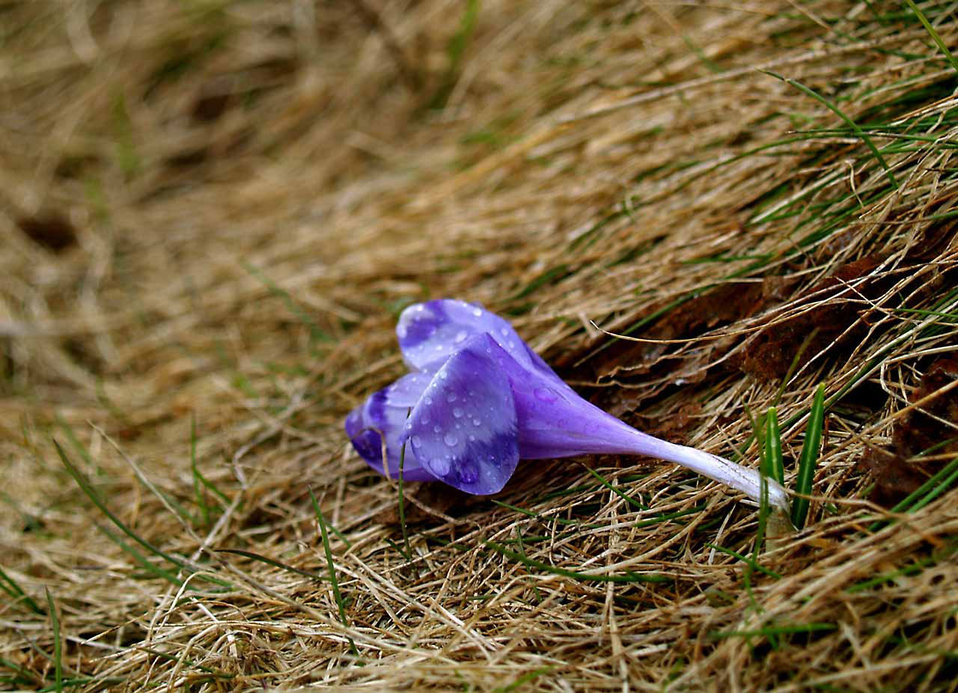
Small flower

A small blue flower.